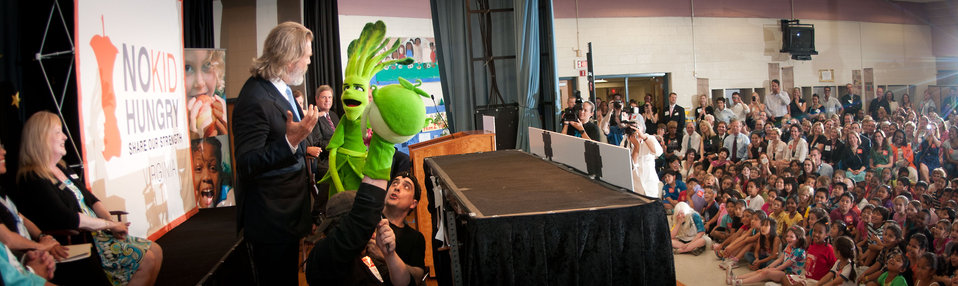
U.S. Department of Agriculture Secretary Tom Vilsack looks on, as No Kid Hungry National Campaign Spokesperson Jeff Bridges (standing left) has a little fun with puppets Sammy Spinach (center) and Suzy Sweetpea (right) before the conclusion of the Virginia No Kid Hungry Campaign launch at Barcroft Elementary School in Arlington, VA, on Tuesday, June 7, 2011. Vilsack said, “ We know our strength comes from out partnerships…” Campaign partners include Share our Strength, the Federation of Virginia Food Banks, corporate partners, education leaders, government agencies and community organizations. The Virginia Summer Meals for Kids Program is funded by the USDA and provides free summer meals at hundreds of sites across the Commonwealth of Virginia, but according to a new report released today by the Food Research and Action Center, more than 80 percent of those eligible do not participate. Governor McDonnell announced and stressed that all parents who want free meals for their kids in need, can simply call 211 to find a summer meals site near them.